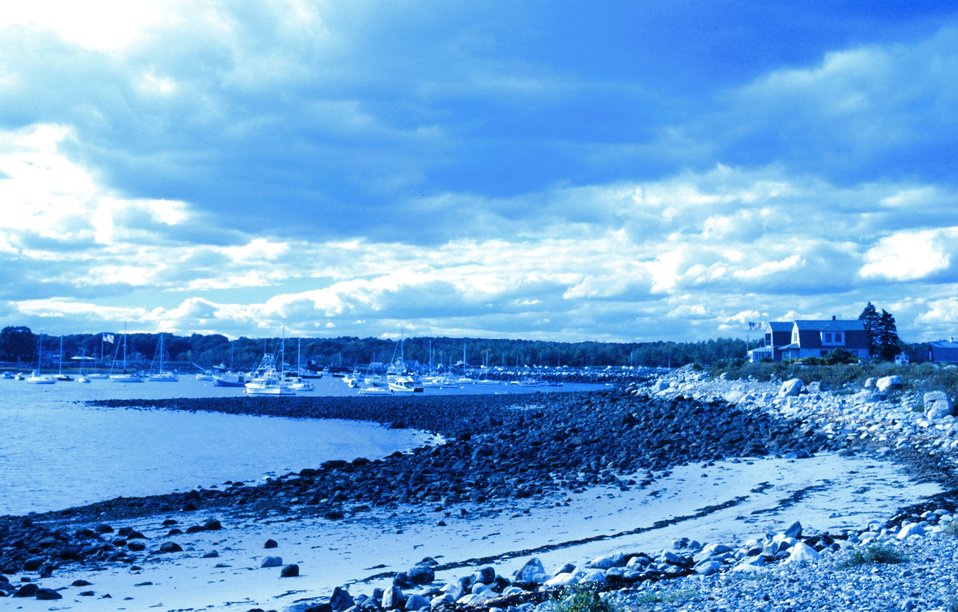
A view of the harbor and beach at Odiorne Point State Park.